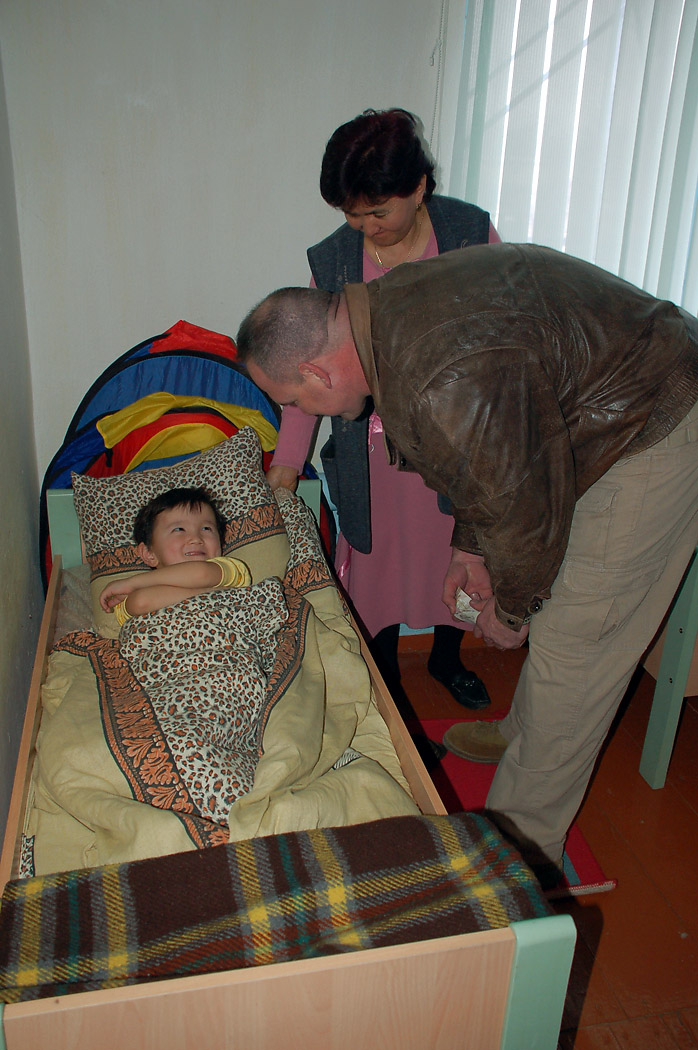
Kyrgyz children thank Manas volunteers

Manzura Kushbaeva looks on as Tech. Sgt. Chad West bids farewell to a child Feb. 20 at the Vasilievka Kindergarten School in Kyrgyzstan. Sergeant West is deployed with the 376th Expeditionary Security Forces Squadron at Manas Air Base, Kyrgyzstan, and is deployed from the Arkansas Air National Guard at Fort Smith. Ms. Kushbaeva is the principal of Vasilievka Kindergarten School.